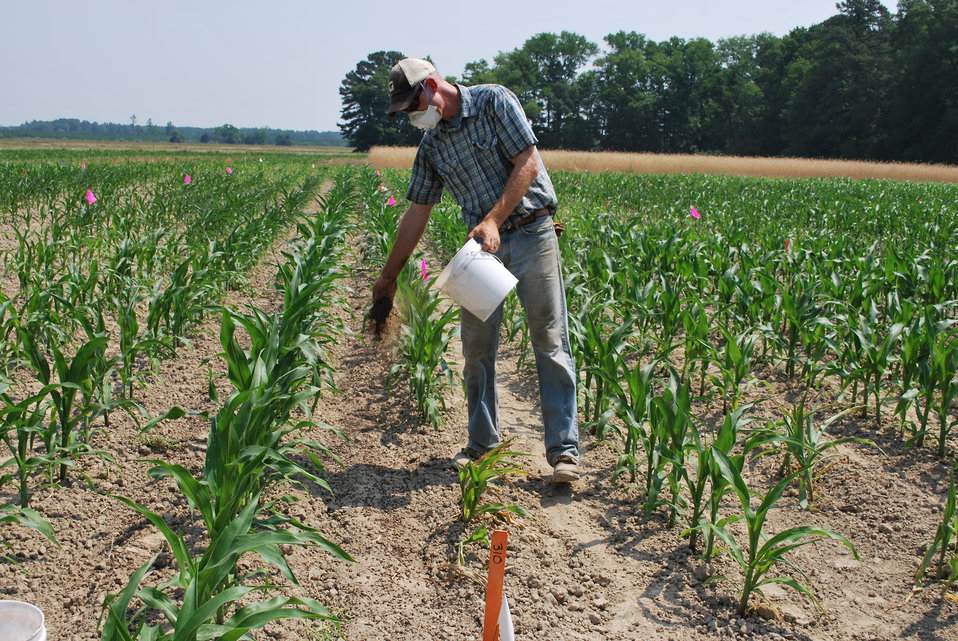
ARS organic Extension

U.S. Department of Agriculture (USDA) Agricultural Research Service (ARS) Postdoctoral associate John Spargo side-dresses an experimental plot of corn with pelletized poultry litter as a soil amendment at the Agricultural Research Service’s Sustainable Agricultural Systems Laboratory, Beltsville, MD on June 10, 2011.